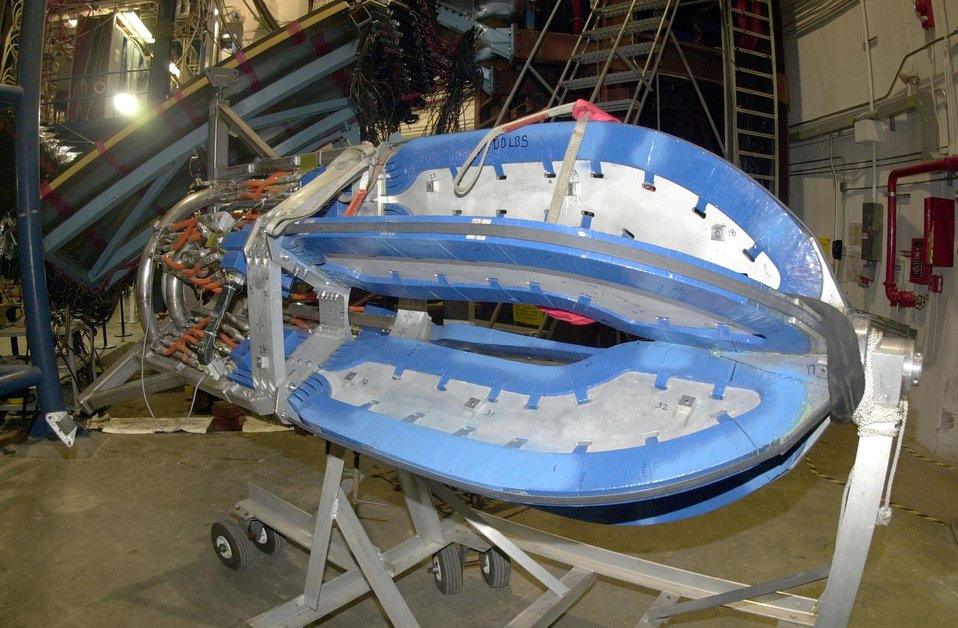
MINI-TORUS MAGNET USED IN HALL B OF THE THOMAS JEFFERSON NATIONAL ACCELERATOR FACILITY.

THE JEFFERSON LAB IS BUILT FOR NUCLEAR PHYSICS RESEARCH. SCIENTISTS USE SUPERCONDUCTING ELECTRON ACCELERATING TECHNOLOGY AT THE LAB'S CONTINUOUS ELECTRON BEAM ACCELERATOR (CEBAF) TO CONDUCT EXPERIMENTS. HIGH ENERGY ELECTRON BEAMS FROM THE ACCELERATOR ALLOWS SCIENTISTS TO PROBE THE ATOM'S NUCLEUS, REVEALING HOW QUARKS MAKE UP PROTONS, NEUTRONS, AND THE NUCLEUS ITSELF.